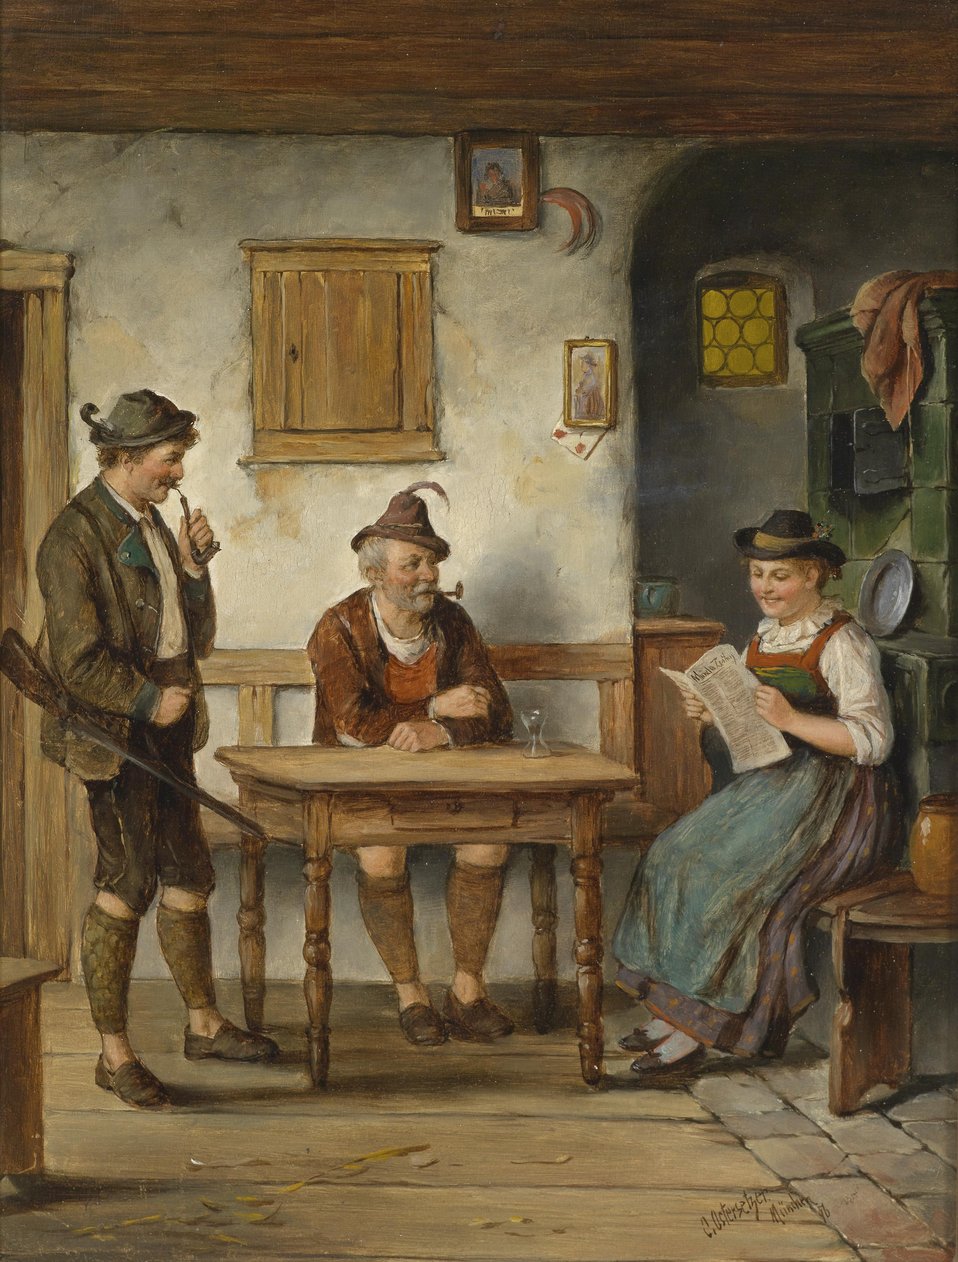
Jägerlatein, signiert, bezeichnet und datiert C. Ostersetzer München (18)96, Öl auf Holz, 26 x 21 cm